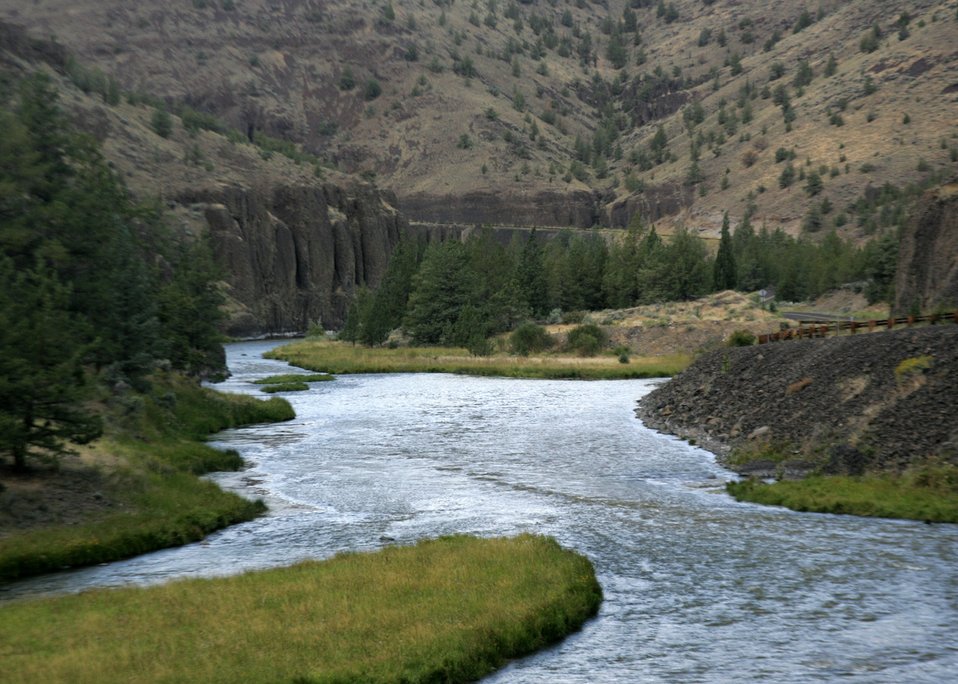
Lower Crooked River Backcountry Byway.